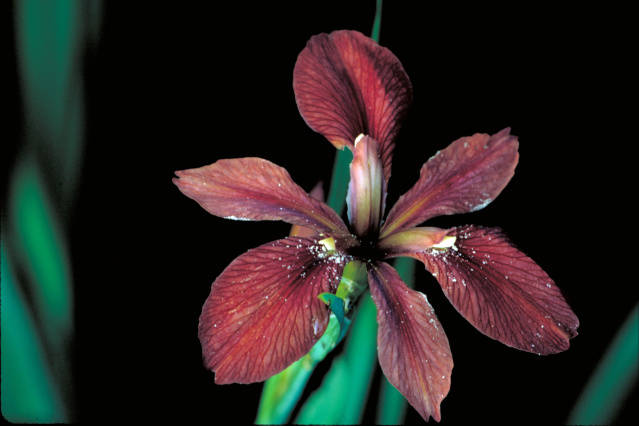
copper iris